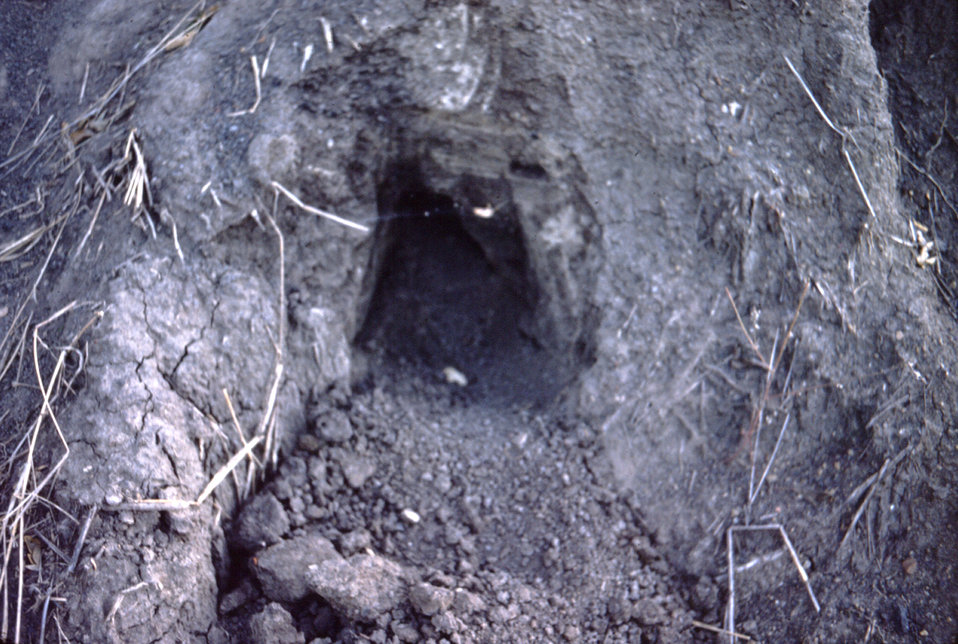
This photograph was taken during a Rhodesian (now Zimbabwean) epidemiologic investigation that occurred after the 1975 South African Marburg outbreak.